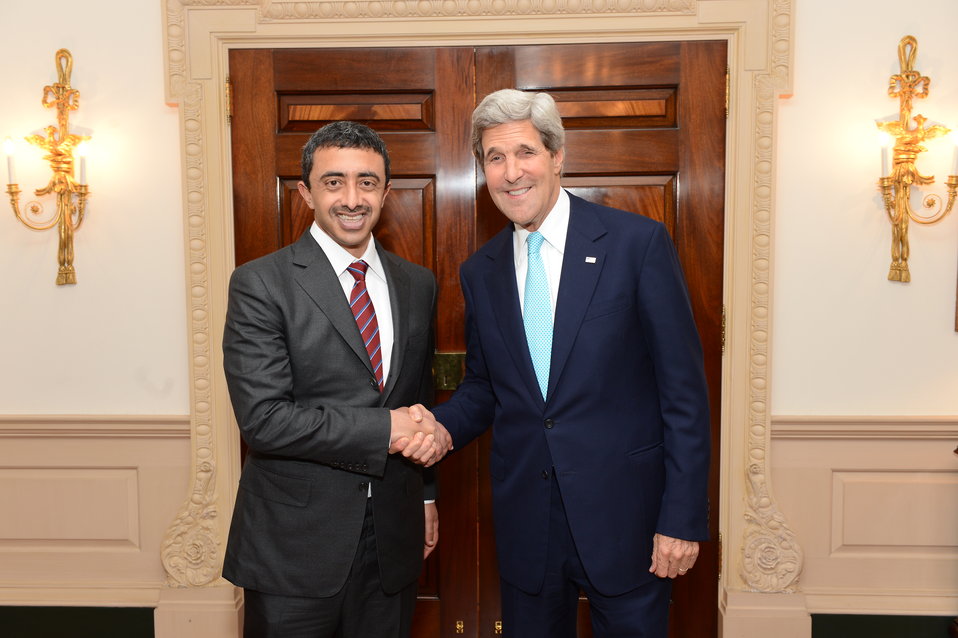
Secretary Kerry Shakes Hands With UAE Foreign Minister Sheikh Abdullah bin Zayed Al Nahyan

U.S. Secretary of State John Kerry shakes hands with Foreign Minister of the United Arab Emirates Sheikh Abdullah bin Zayed Al Nahyan before their bilateral meeting at the U.S. Department of State in Washington, D.C., on July 23, 2013.